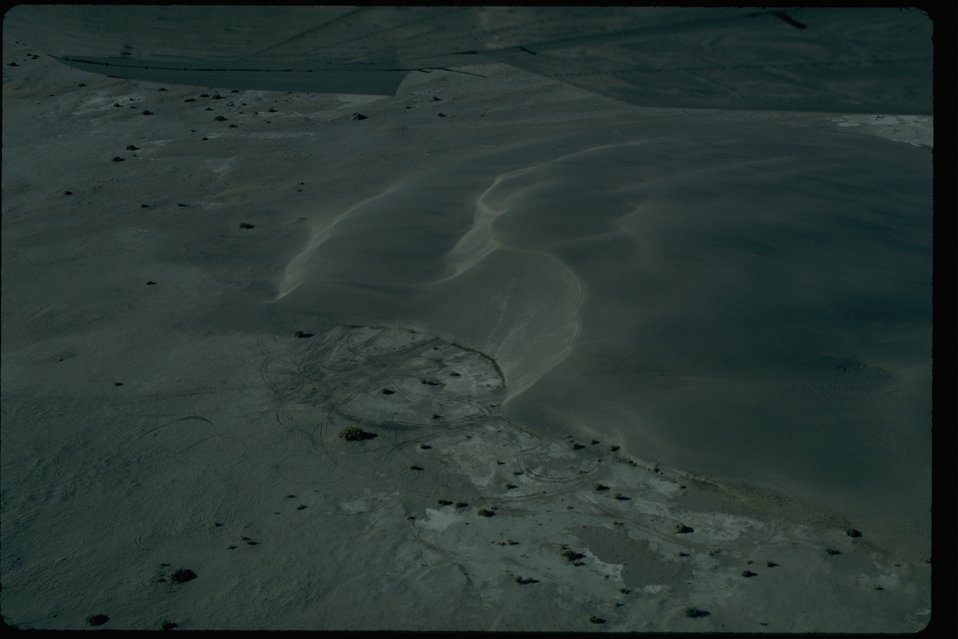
Large sand dunes in the Sand Dunes Wilderness Study Area. OR 1-24